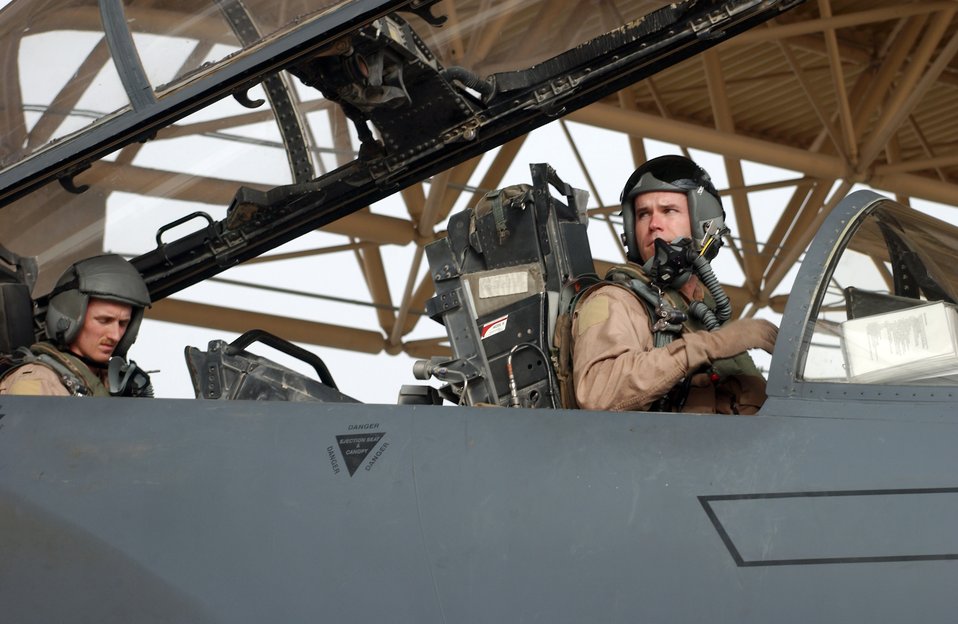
Combat mission

Maj. Jeff O'Donnell lowers the cockpit canopy as 1st Lt. Nathan Rivinius goes over his checklist before a combat mission from a forward operating base in Southwest Asia Aug. 18. Major O'Donnell is a pilot and Lieutenant Rivinius is a weapons systems officer. They are deployed to the 335th Expeditionary Fighter Squadron from Seymour Johnson Air Force Base, N.C.